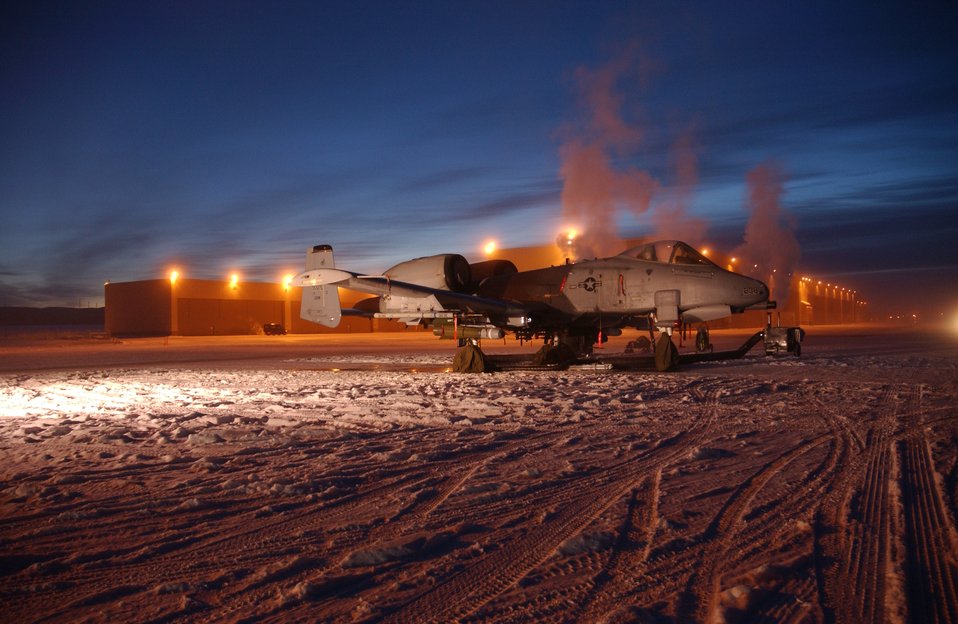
Ready to go

EIELSON AIR FORCE BASE, Alaska -- An O/A-10 Thunderbolt II stands ready just before a training mission here Dec. 21. The aircraft is assigned to the 354th Fighter Wing and its primary missions include air-strike control, close-air support, target interdiction, joint-air attack, combat escort, and combat search and rescue.